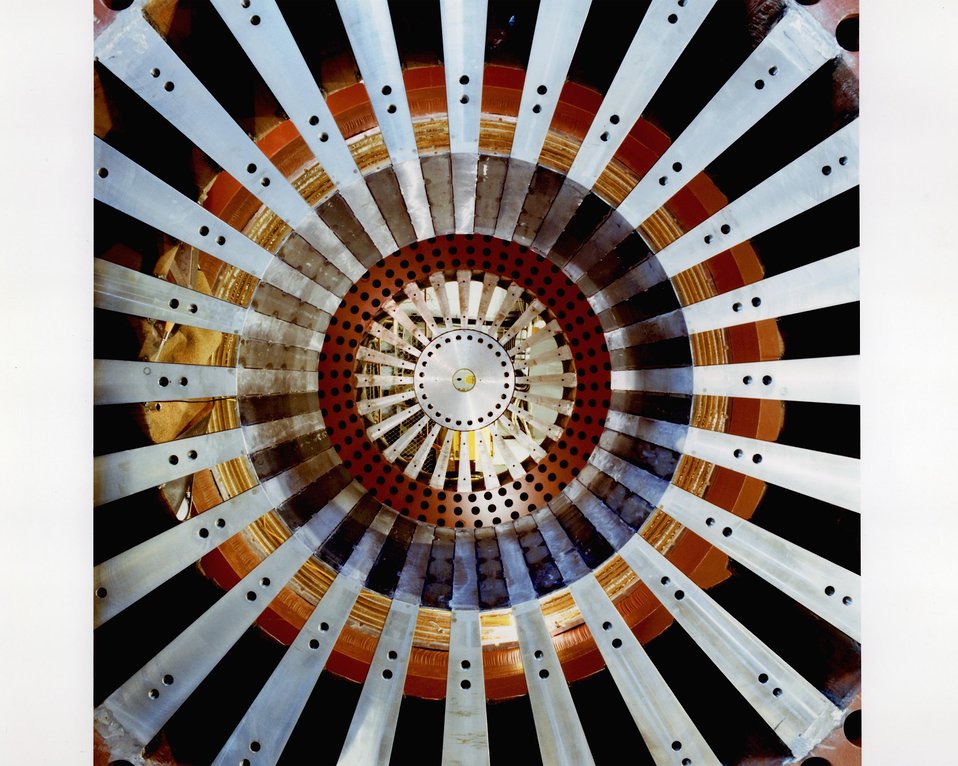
LOOKING INTO THE HEART OF THE 420 TON MAGNET FOR AN EXPERIMENT AT THE AGS.

BROOKHAVEN'S ALTERNATING GRADIENT SYNCHROTRON, A HIGH ENERGY ACCELERATOR, IS CRITICAL TO PHYSICISTS ONGOING SEARCH FOR RARE DECAYS OF SHORT-LIVED SUBATOMIC PARTICLES CALLED KAONS. A SEARCH DESIGNED TO TEST A THEORY OF MATTER KNOWN AS THE STANDARD MODEL.